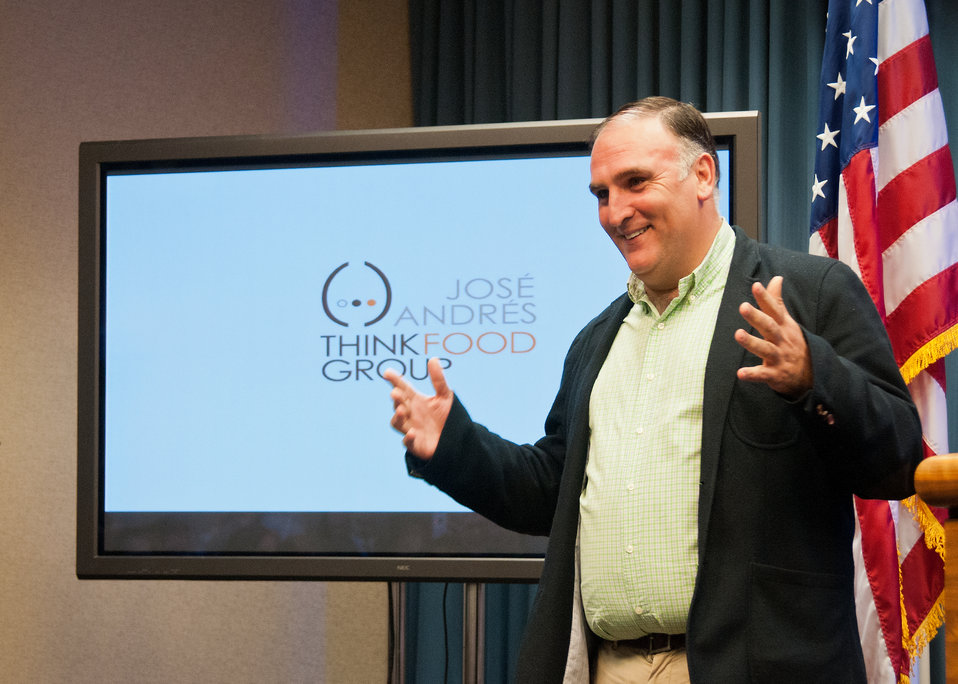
Chef Jose Andres, Chef/Owner, Think Food Group the guest speaker at the kick-off meeting of the United States Department of Agriculture White House Liaison Weekly Political Appointee Meeting for the New Year in Washington, DC, Thursday, January 20, 2012. Chef Andres discussed creativity and how it can contribute to food policy.